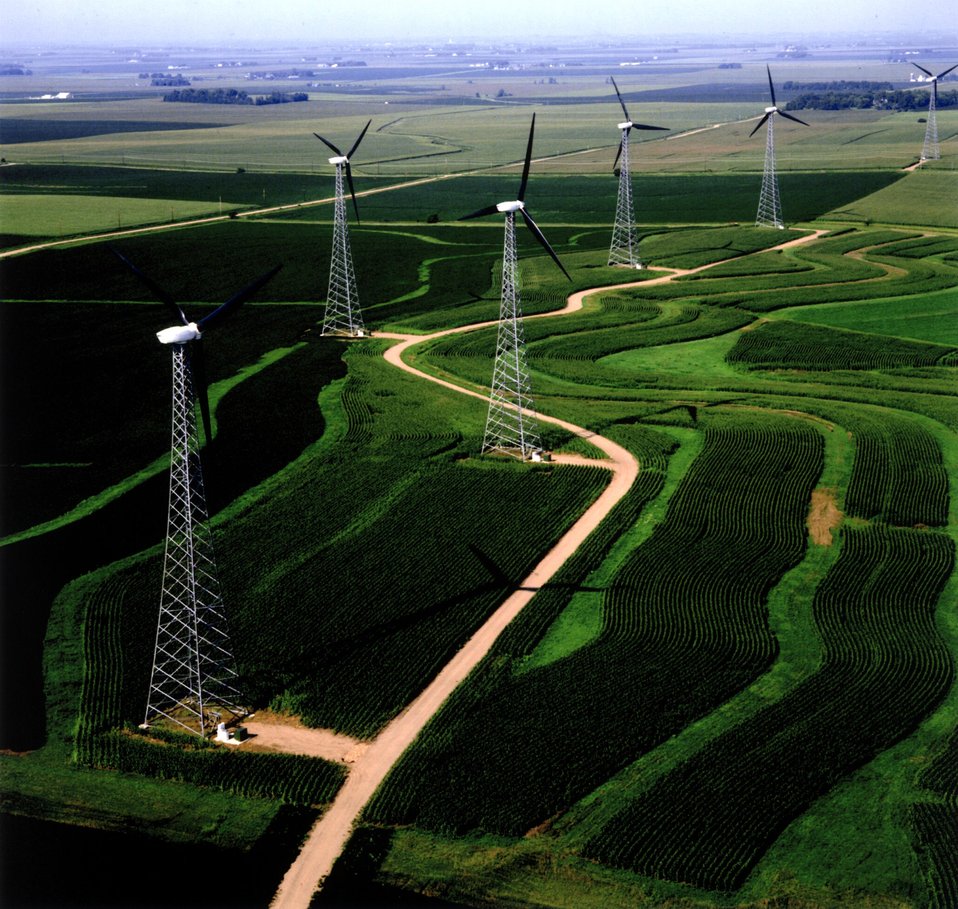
WIND TURBINES AT STORM LAKE, IOWA.